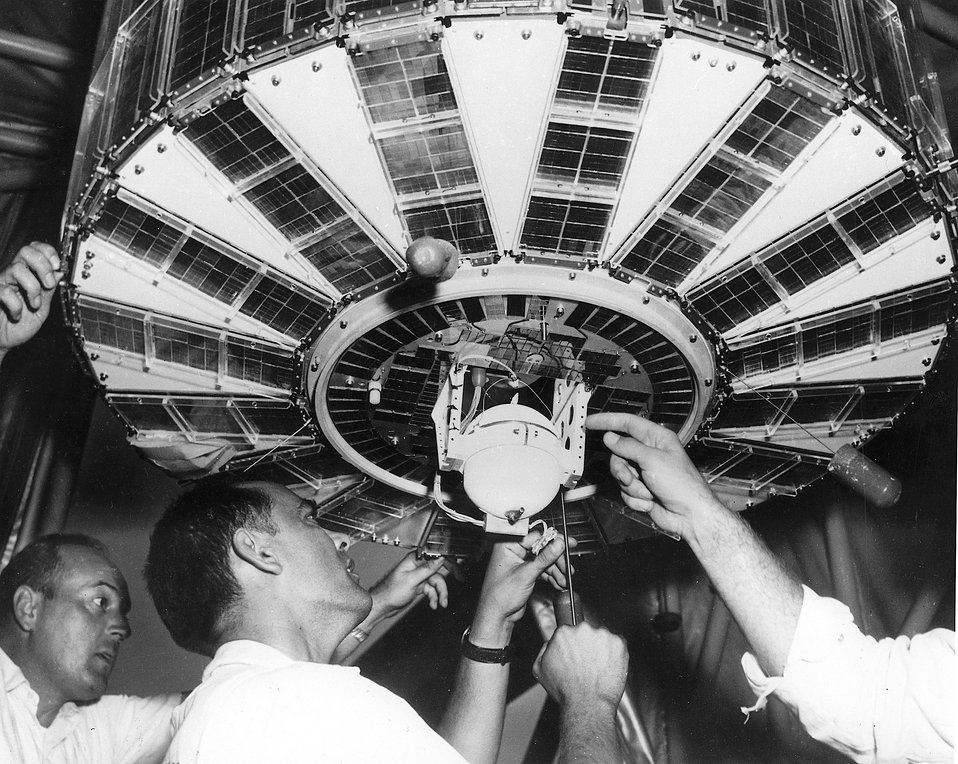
Cape Canaveral, FL....Installation of SNAP device to the Navy's navigational satellite at Cape Canaveral by technicians of the Johns Hopkins' Applied Physics Laboratory. This is the first atomic power supply used in space.